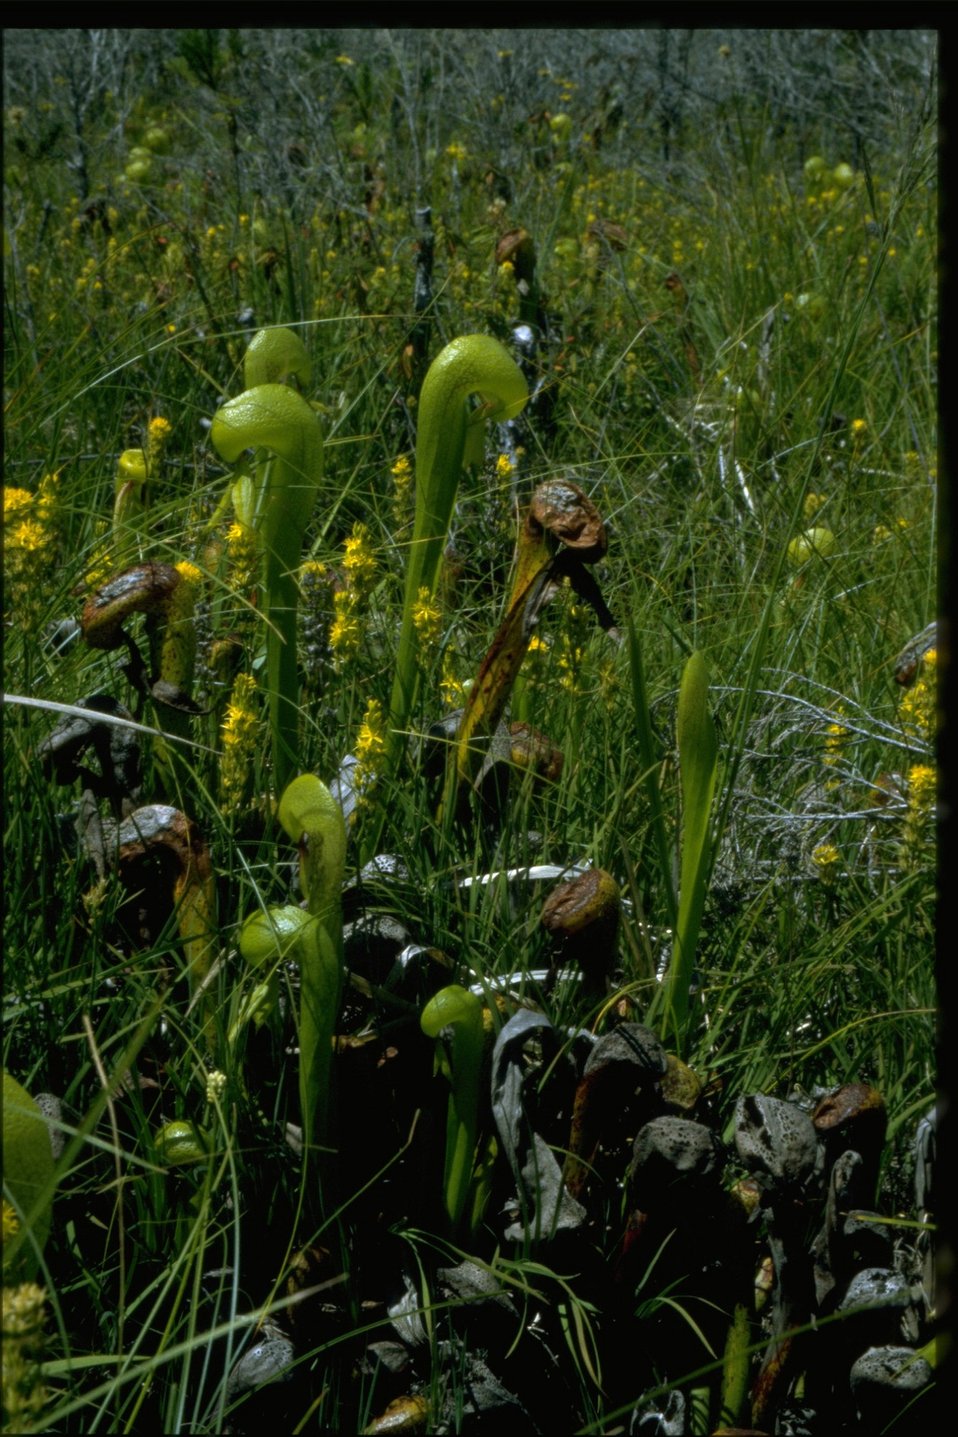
Medium shot of Cobra Lily, Darlingtonia californica.